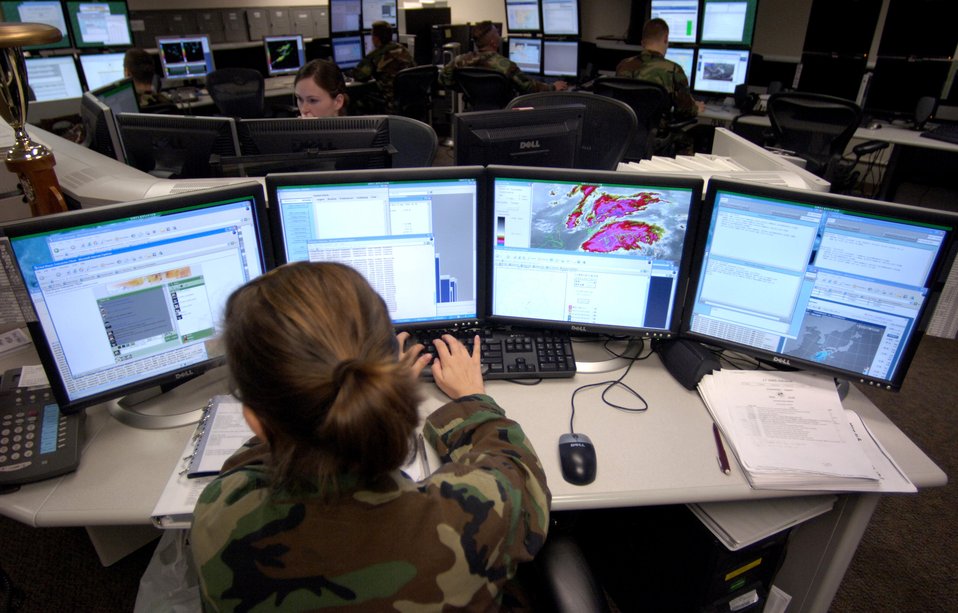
Weather squadrons complete merger

Airman 1st Class Lindsay Jewell watches the weather over Japan on the operations floor Tuesday, April 18, 2006, at Hickam Air Force Base, Hawaii. Airman Lindsay is a weather forecast apprentice with the 17th Operational Weather Squadron, which provides Pacific Air Forces with tailored operational forecasts.